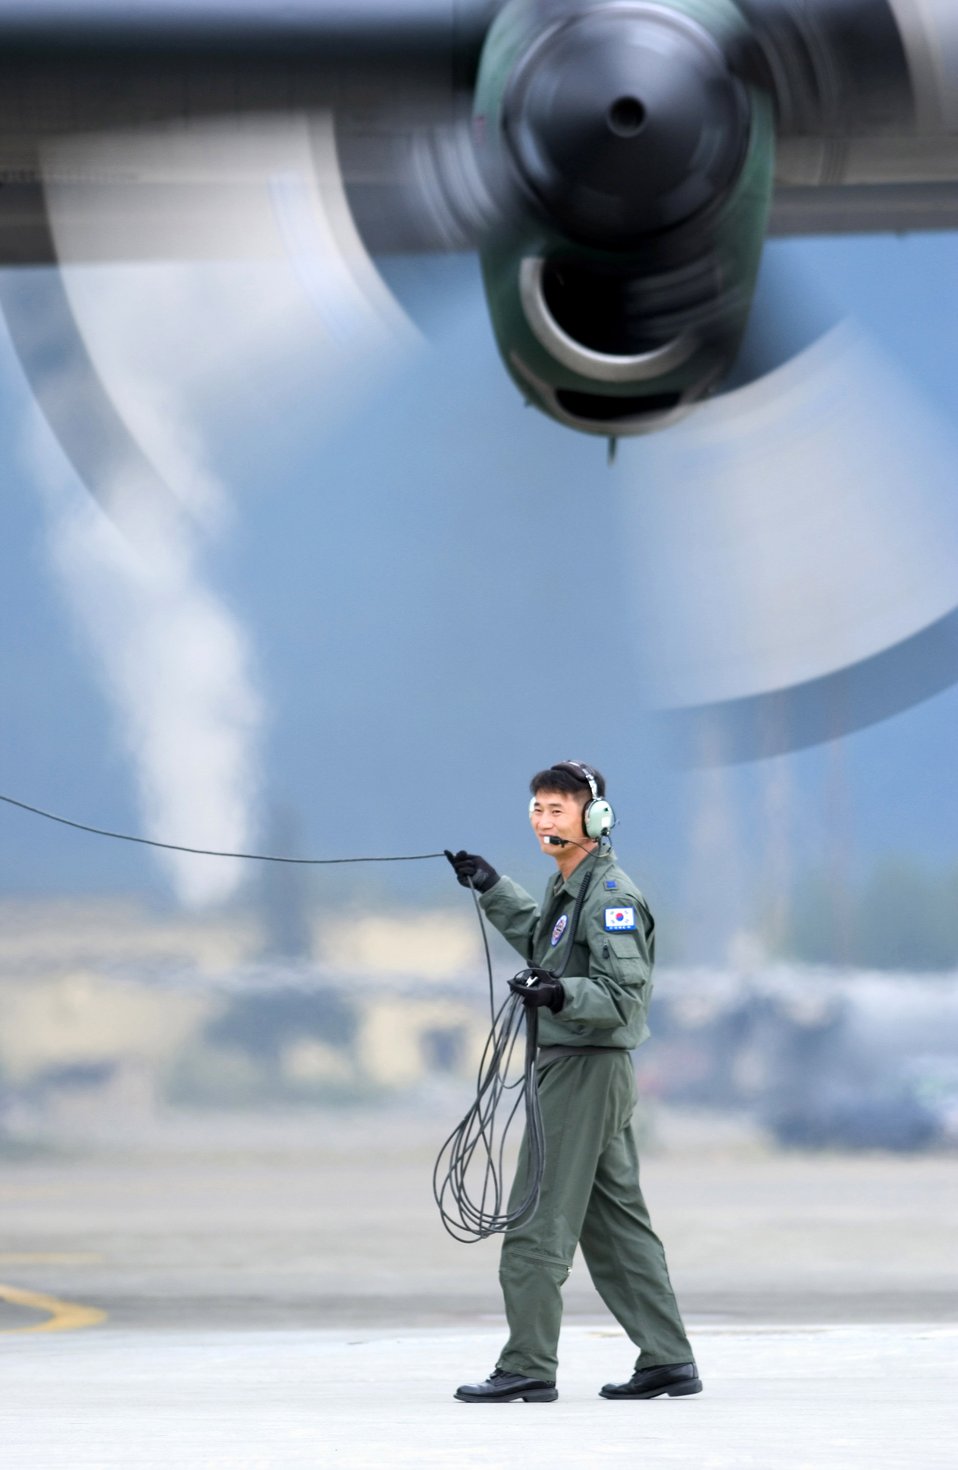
Exercise strengthens U.S., international combat skills

Korean air force Senior Master Sgt. Bumsoo Shin monitors engine startup on a C-130 at Elmendorf Air Force Base, Alaska, on July 25. The Korean air force and other multi-national aircrews are in Alaska participating in the Pacific Air Forces exercise Cooperative Cope Thunder.